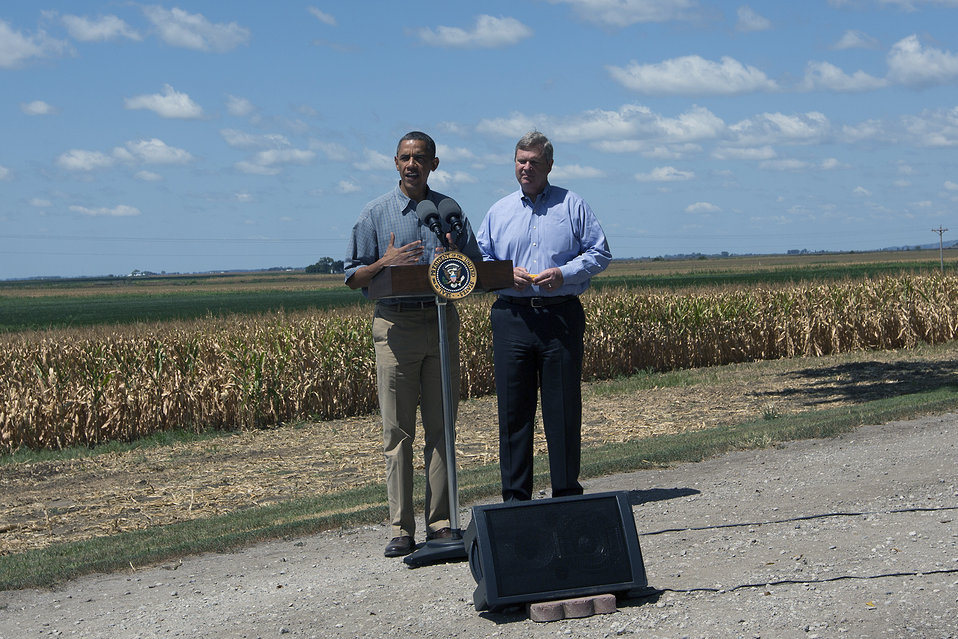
President Barack Obama and Agriculture Secretary Tom Vilsack visited the McIntosh family farm in Missouri Valley, Iowa, on Monday, August 13, 2012 to view the drought stricken crops. The federal government has already taken some steps to ease farmers whose crops are growing poorly this summer, and the administration plans to spend close to $200 million on livestock, officials announced earlier in the day. The Department of Defense is encouraging vendors to buy meat to ease the crisis.